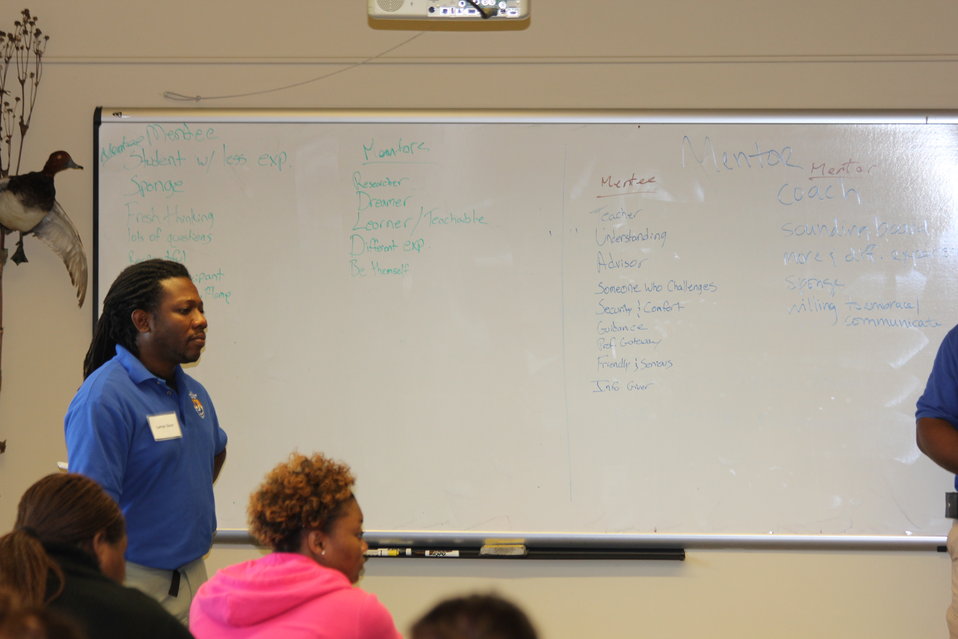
CDIP 2012 Fergus Falls

Lamar and Mentor/Mentee relationships